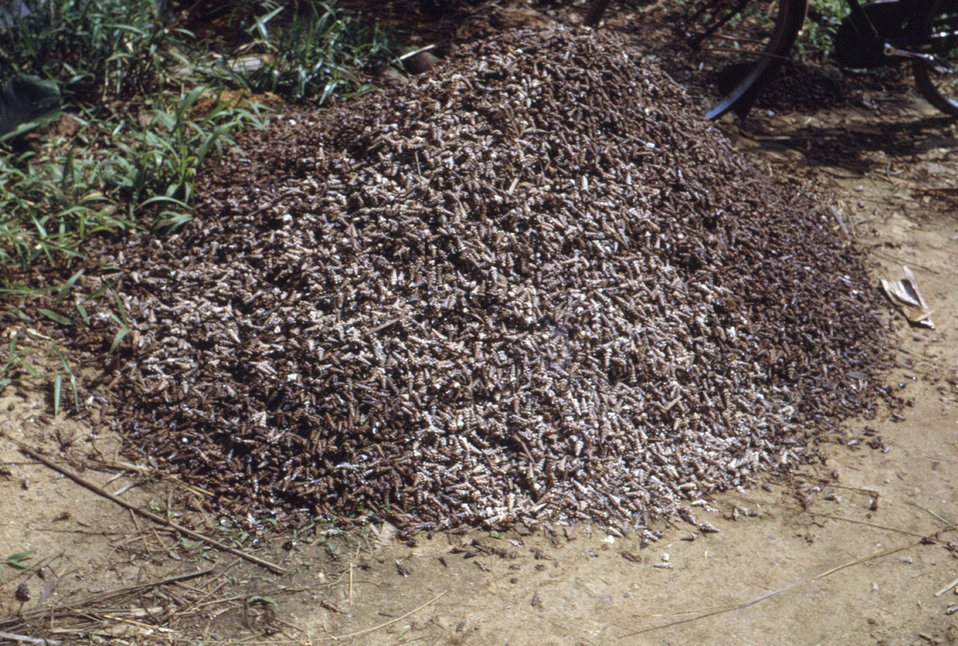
This 1968 photograph, taken during the Nigerian-Biafran civil war, showed snail shells that were piled up after children extracted snail meat to be used in the family soup.